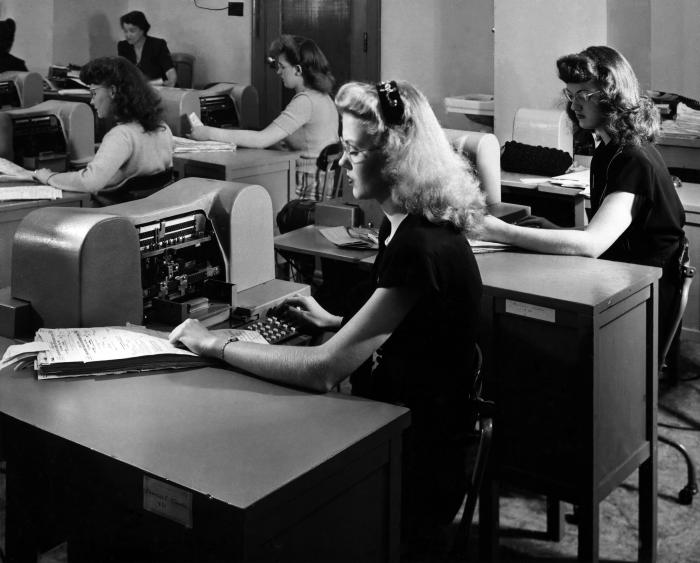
This November, 1947 photograph was provided by the Center for Disease Control's (CDC), National Institute for Occupational Safety and Health (NIOSH). The image deoicted a number of women in an office setting at the Bureau of Internal Revenue, which later was renamed the Internal Revenue Service (IRS). The purpose of the photograph was to document the effect of improved lighting within the work environment, upon workstation comfort, as these women were operating tabulating machines.Office work is visually demanding, and has always required good lighting, which may be defined as that which provides enough illumination so that workers can see printed, handwritten, or displayed documents clearly, but are not 'blinded' by excessively high light levels. The most common complaints resulting from poor lighting are eyestrain, eye irritation due to dry eyes, blurred vision, and headaches.